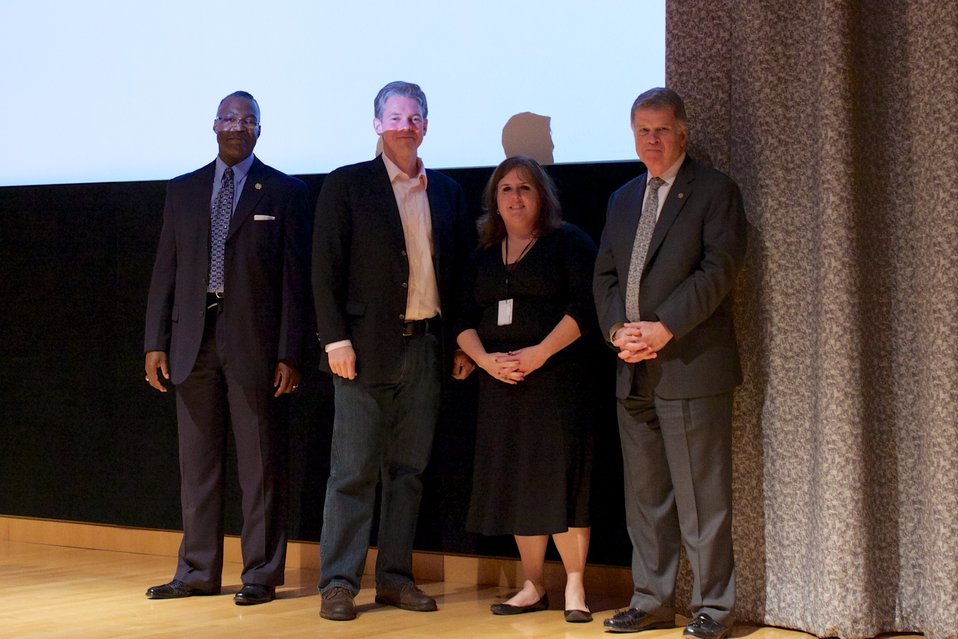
CFC Recognition Event